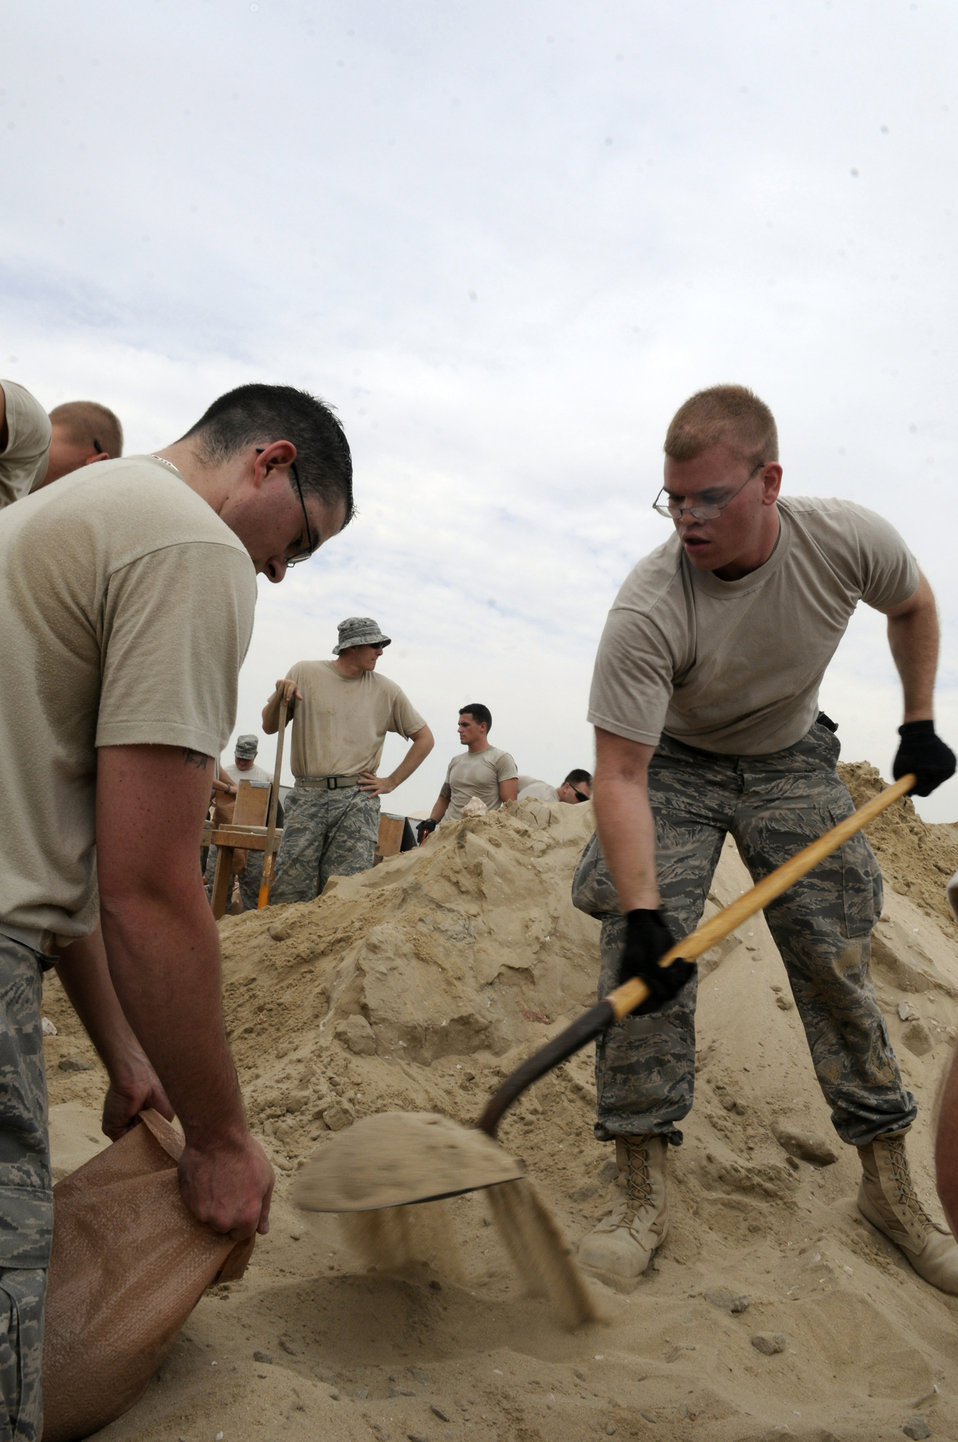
Working in the sand

Staff Sgt. John Carlson (right) and Senior Airman Tyson Powell, both assigned to the 379th Expeditionary Communications Squadron, fill sand bags Nov. 4 at an air base in Southwest Asia. The sandbags will be used to fortify emergency bunkers in support of operations Iraqi Freedom and Enduring Freedom and Joint Task Force-Horn of Africa. Sergeant Carlson, a native of Tacoma, Wash., is deployed from Incirlik Air Base, Turkey. Airman Powell, from Tomah, Wis., is deployed from Royal Air Force Alconbury, England.